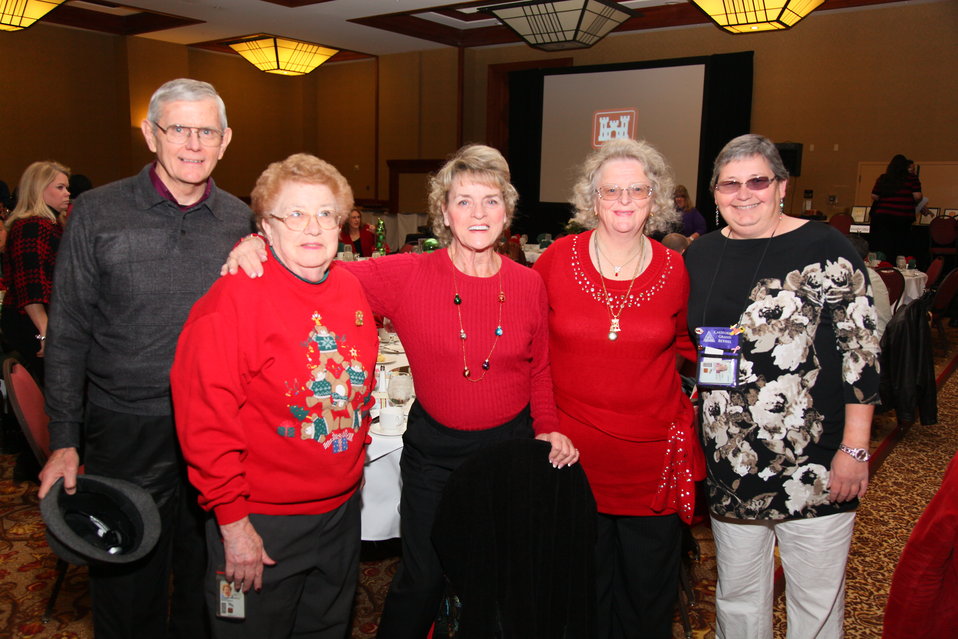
Sacramento District Holiday Party 2011